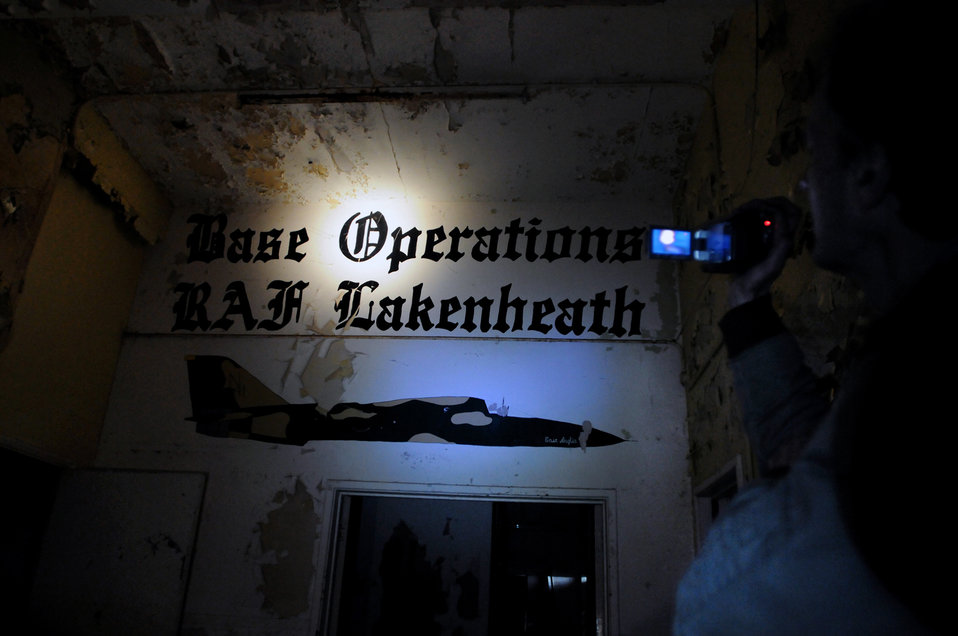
Leakenheath tower falling down

Joe Koziar, a local fourth-grade school teacher, documents his visit to the old air traffic control tower at Royal Air Force Lakenheath, England, Feb. 27. The